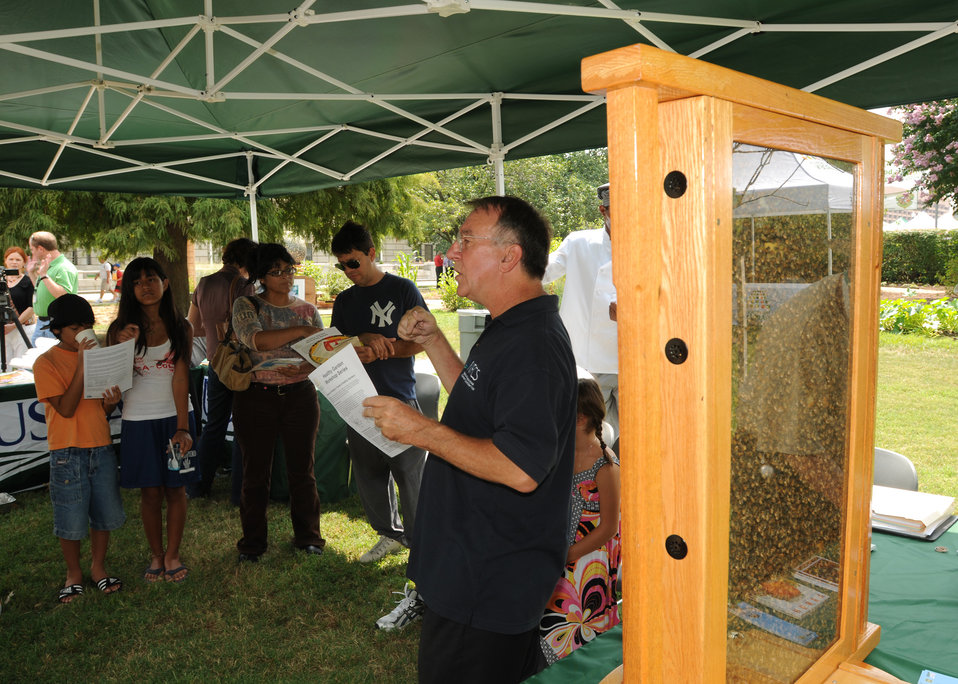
USDA employee volunteers in the People's Garden by discussing pollinators during a Healthy Garden Workshop.